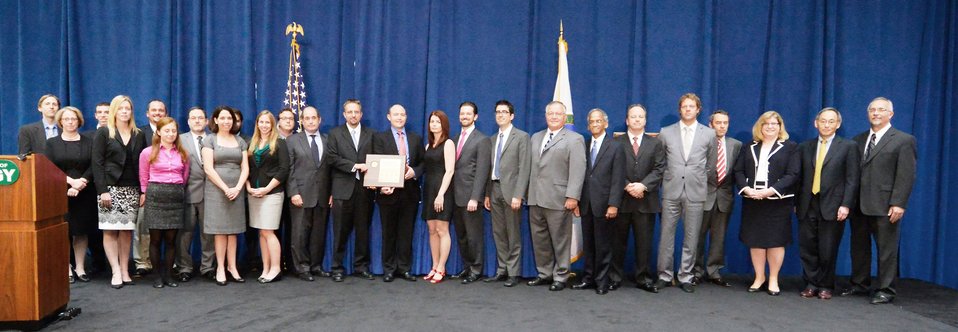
Seoul Nuclear Security Summit

Awardees (not all pictured): Trent Andes, Arthur G. Atkins, Andrew J. Bieniawski, Igor Bolshinsky, Jeffrey D. Chamberlin, Kristin R. Childress, James H. Conner, Kelly N. Cummins, Kara L. De Castro, Sarah L. Dickerson, Sean Dunlop, Shannon M. Ewan, Jeffrey J. Galan, John Gerrard, Joseph W. Glaser, Michael J. Gonzalez, Courtney L. Greenwald, Rilla F. Hamilton, Joanna M. Iliopulos, Melissa M. Krupa, Christopher C. Landers, Heather K. Looney, David N. Lopez, Natraj lyer , Ross Matzkin-Bridger, Joshua T. McConaha, Catherine R. Mendelsohn, Charles E. Messick, Jack A. Nunes, Harriet J. Raber, Scott D. Ravenhill, Scott A. Roecker, Kenneth B. Sheely, Parrish A. Staples, Randall R. Weidman, Mark Whitney, Amy B. Whitworth, Eric Woolstenhulme. In recognition of contributions to the largest summit ever held in the nuclear security field. Participants included more than 53 heads of state and international organizations, including the President of the United States. The Seoul Nuclear Security Summit brought these parties together to discuss international cooperative measures to protect nuclear materials and facilities from terrorist groups. The National Nuclear Security Administration completed numerous high priority projects that were among the most important activities highlighted at the Summit. These activities were the culmination of over two years of intensive efforts which included the completion of several Presidential commitments made at the 2010 Nuclear Security Summit in Washington, D.C. These actions directly support President Obama's international effort to secure all vulnerable nuclear material around the world within four years and have made the United States and the entire international community safer from the threat of terrorism.